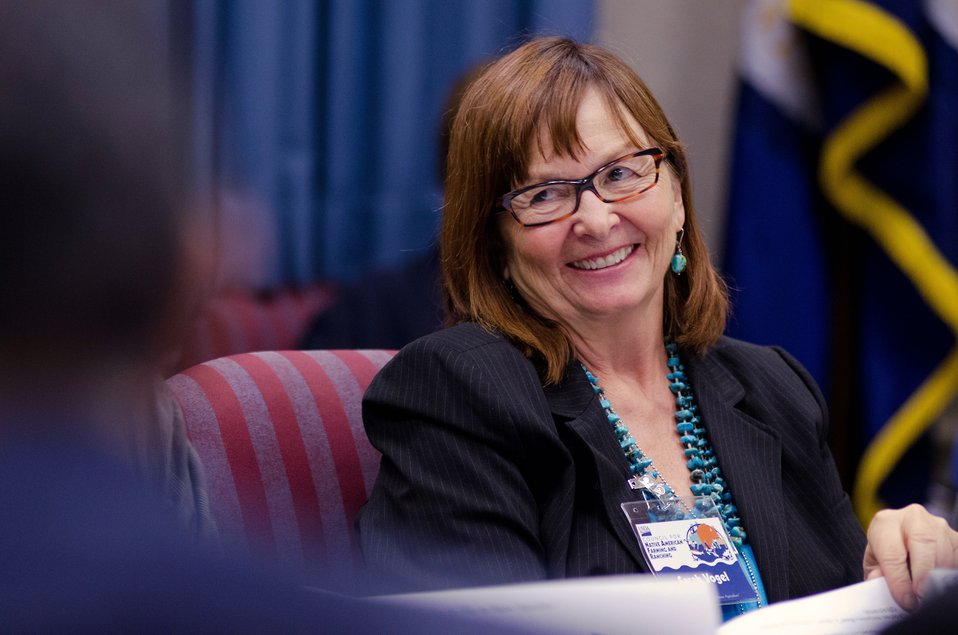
Civil Rights Attorney and former Agricultural Commissioner for North Dakota Sarah Vogel, Bismarck, N.D. during the first administrative/training meeting of the U.S. Department of Agriculture's (USDA) Council for Native American Farming and Ranching (CNAFR), held on Monday, Aug. 13, 2012 at the USDA headquarters Whitten Building, in Washington, D.C. CNAFR was created to advise the Secretary on ways to eliminate barriers to participation for Native American Farmers and Ranchers in USDA programs. The Council was established as part of the Keepseagle settlement, and is conducted under the oversight of USDA's Office of Tribal Relations, which is part of the Office of the Secretary of Agriculture. The Director of Tribal Relations Joanna Mounce Stancil serves as Designated Federal Official (DFO) for the Council.